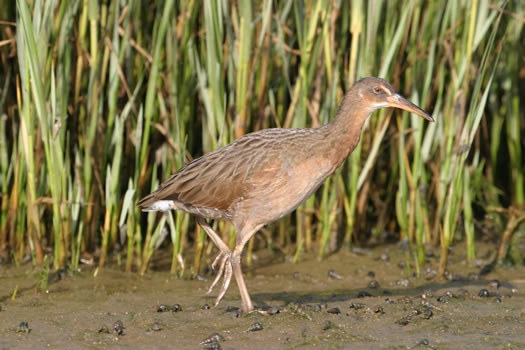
Tijuana Slough NWR clapper rail

A light-footed clapper rail is among the many bird species visitors may see at Tijuana Slough National Wildlife Refuge in California. (USFWS)